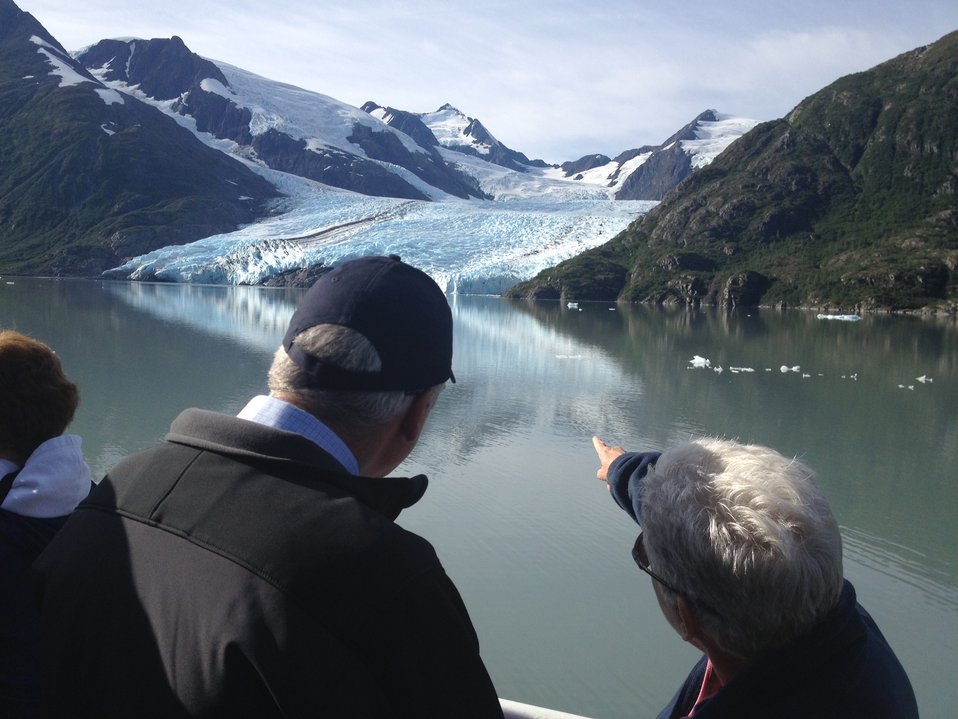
Administrator Gina McCarthy at Portage Lake Glacier, Alaska

EPA Administrator Gina McCarthy visited Portage Lake Glacier outside Anchorage, Alaska to highlight President Obama's Climate Action Plan and the urgency to act now on the issue. In this photograph, McCarthy discusses the receding glacier with EPA Region 10 Administrator Dennis McLerran.